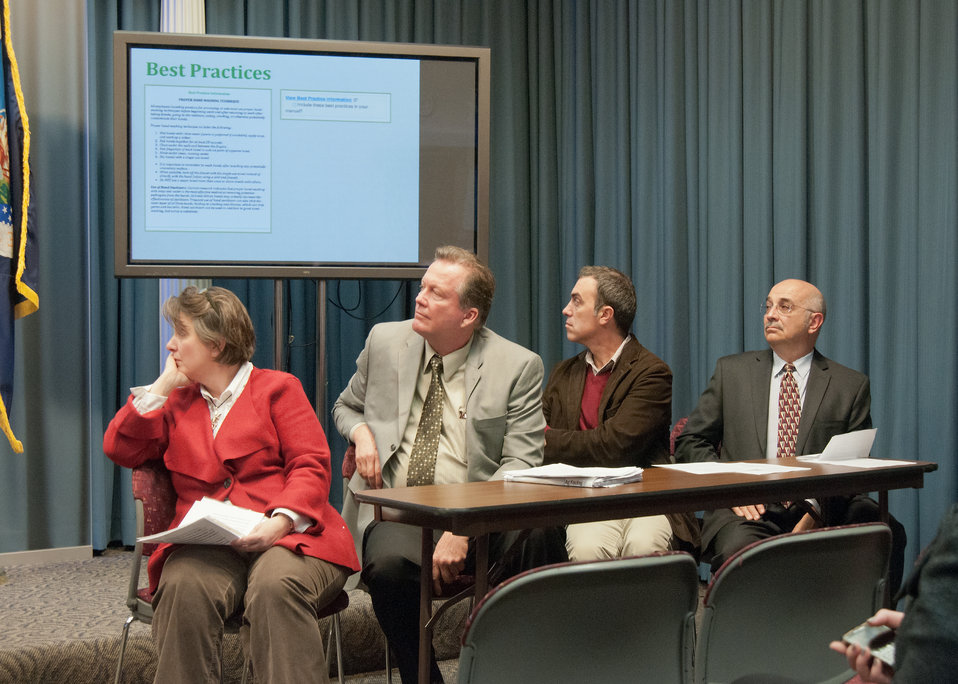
From left: Agriculture Deputy Secretary Dr. Kathleen Merrigan, Steve Murray, Murray Family Farms, Bakersfield, CA., Phil Petrilli, Regional Director, Chipotle Mexican Grill and Marc Zammit, Vice President, Sustainability and Culinary Initiatives, Compass Group listen to Jim Slama, President and Founder, FamilyFarmed.org’s On-Farm Food Safety Project presentation during a brief overview of the online risk management tool www.onfarmfoodsafety.org. Deputy Secretary Merrigan, Murray, Petrilli, Zammit and leaders from agriculture and food organizations announced the release of the online tool at the United States Department of Agriculture in Washington, D.C., on Thursday, December 15, 2011. The On-Farm Food Safety Project is the first of its kind and was developed by a broad coalition of farm and produce industry partners with lead funding from the USDA Risk Management Agency.